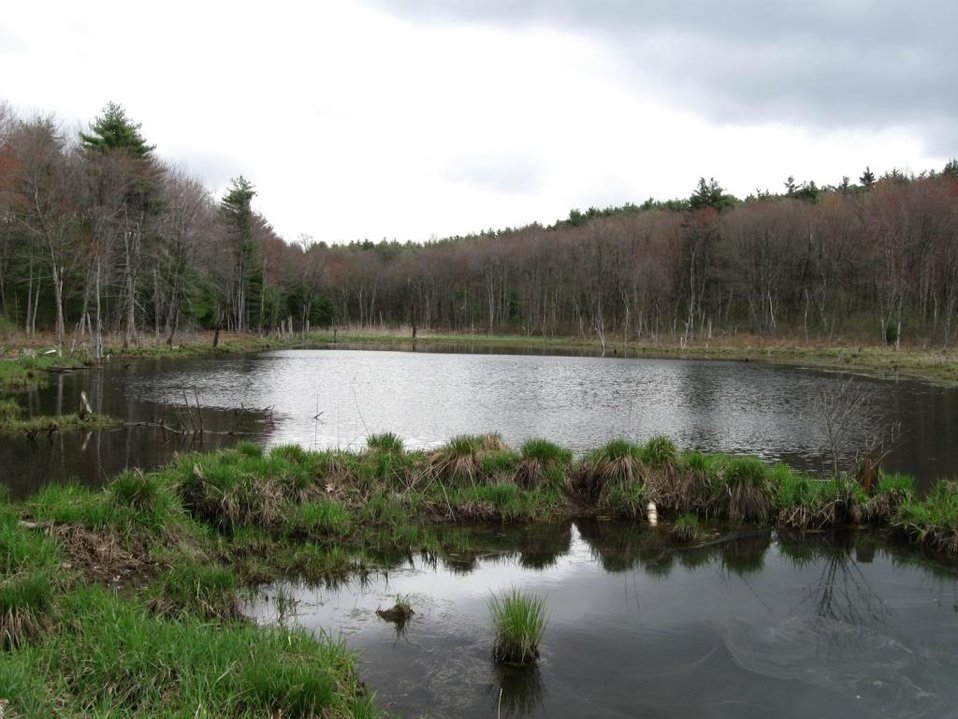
Oxbow National Wildlife Refuge

Credit: Zachary Cava/USFWS

Oxbow National Wildlife Refuge is part of the Eastern Massachusetts National Wildlife Refuge Complex.